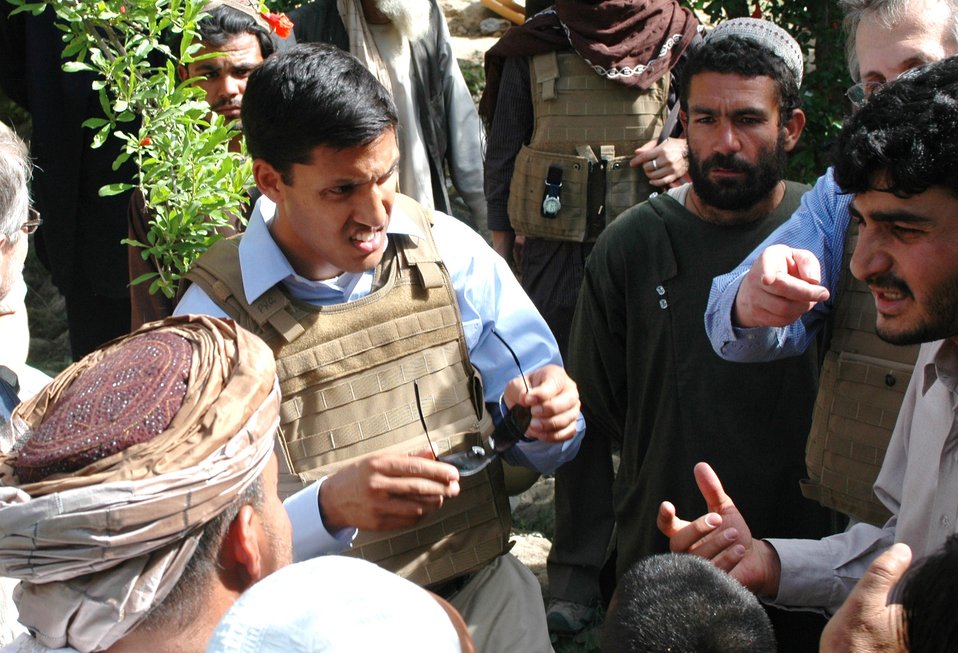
Dr Shah Visits Argandab April 10, 2010